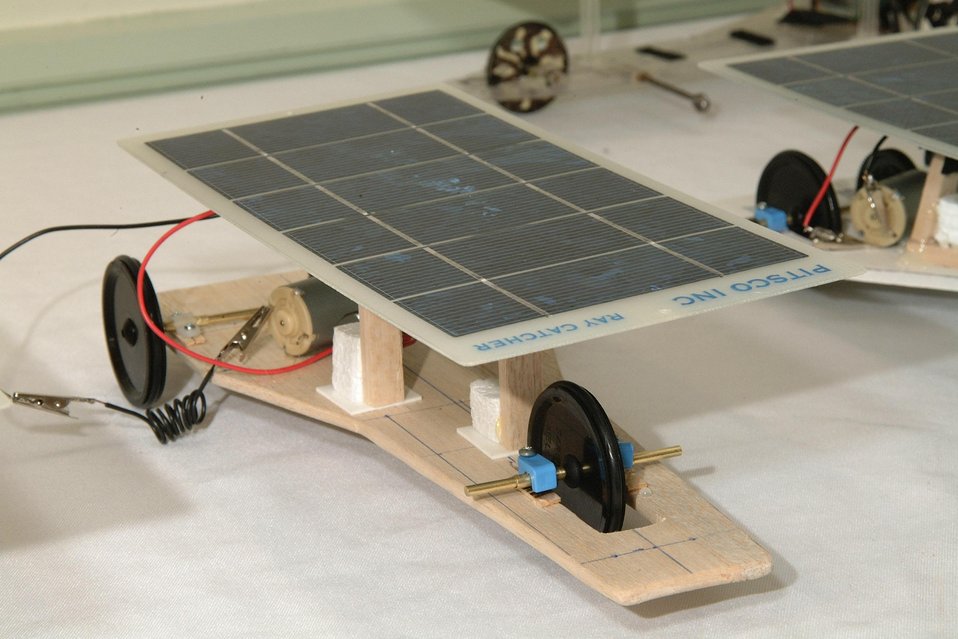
MODEL SOLAR CAR ENTERED INTO DOE'S NATIONAL MIDDLE SCHOOL SCIENCE BOWL.

THE DEPARTMENT OF ENERGY SPONSORED THE FIRST NATIONAL MIDDLE SCHOOL SCIENCE BOWL ON MARCH 21-24, 2002 IN WASHINGTON, DC AT DOE HEADQUARTERS FORRESTAL BUILDING. ON MARCH 23RD THE COMPETITION INCLUDED A MODEL SOLAR CAR RACE HELD AT THE NATIONAL 4-H CONFERENCE CENTER, CHEVY CHASE, MD. THE MODEL CARS WERE DESIGNED AND CONSTRUCTED BY THE TEAM MEMBERS.